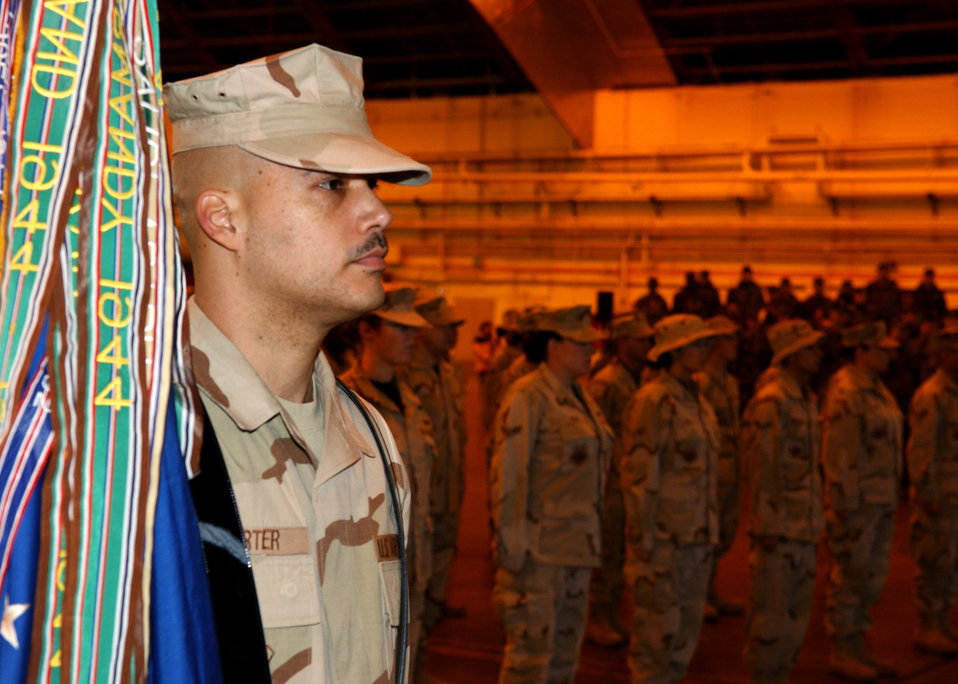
Welcome Home Ceremony

Master Sgt. Derrick Carter, 354th Mission Support Squadron, Eielson Air Force Base, Alaska, performs guide on duties for the Welcome Home Ceremony in the Thunderdome March 9. The ceremony honored more than 400 Airmen who returned from deployments over the past six months.